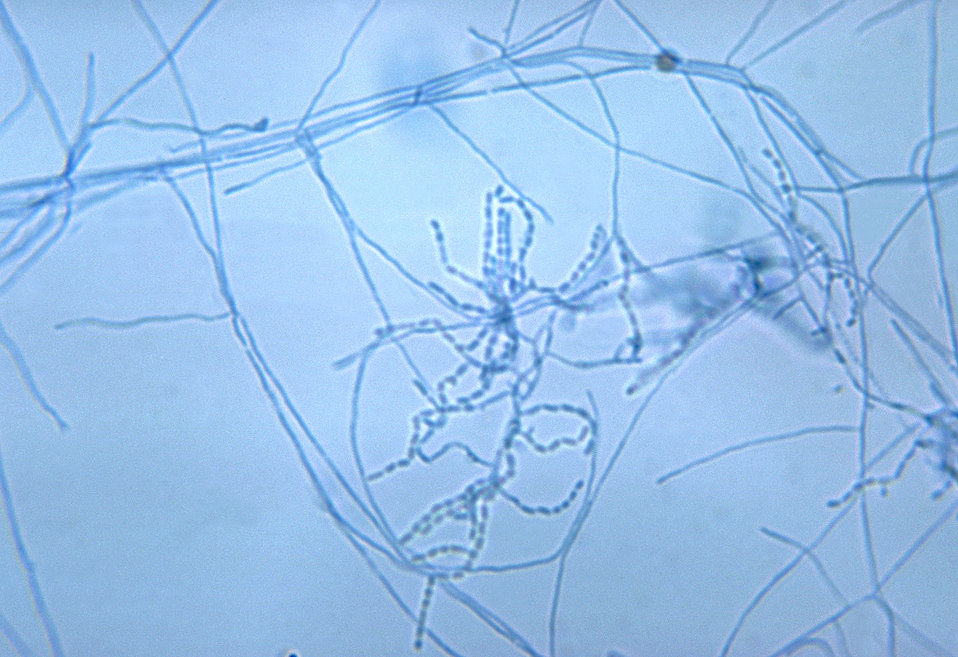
This Gram-positive aerobic Nocardia asteroides slide culture reveals chains of bacteria amongst aerial mycelia.